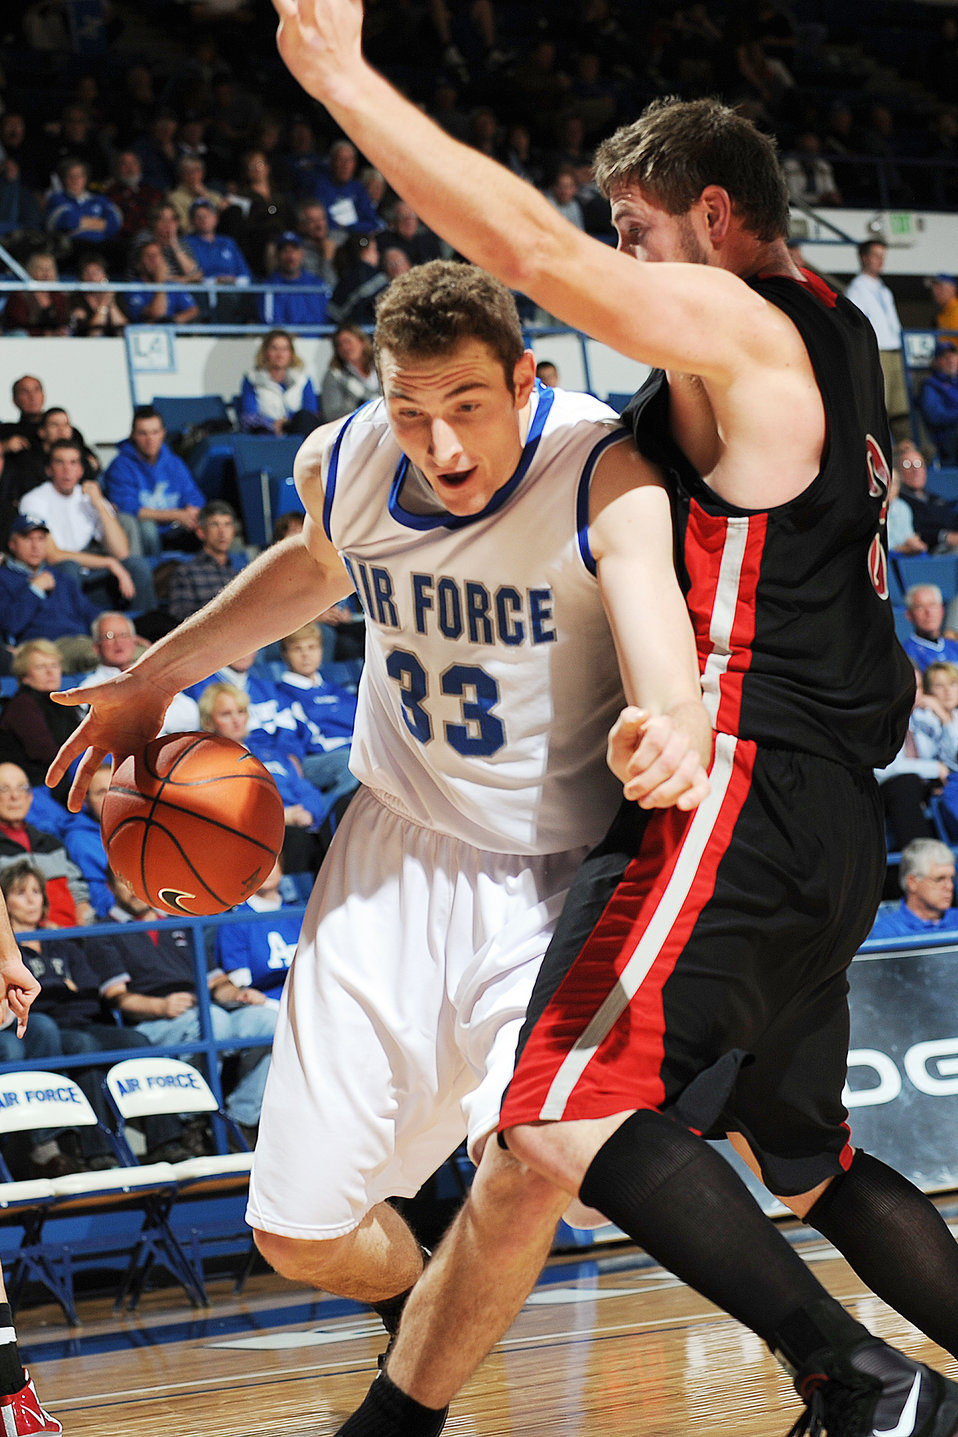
Falcons reign supreme in season opener

On his way to the basket Falcon senior forward Mike McLain brushes by Western State defender Troy McCoy Nov. 13, 2009 in Clune Arena at the U.S. Air Force Academy, Colo. In their season opener, the Falcons beat the Mountaineers 65-54.